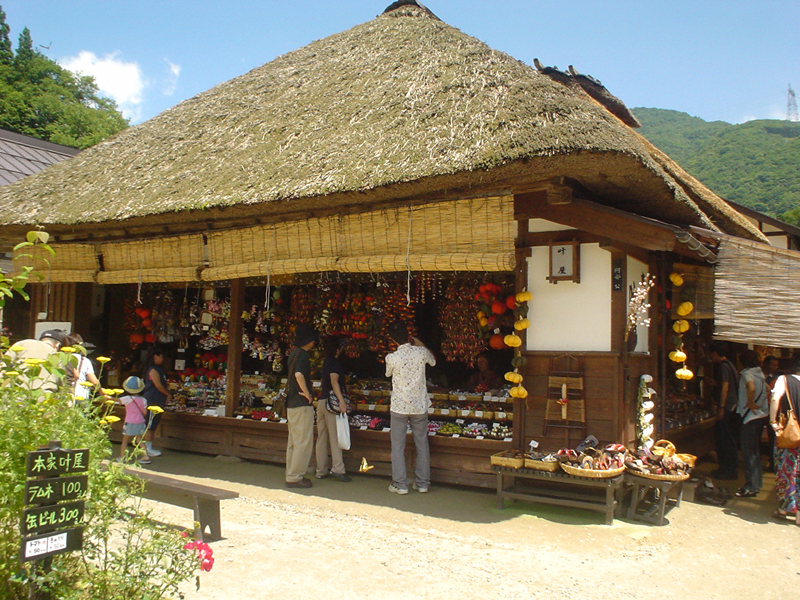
日本語: ja:福島県ja:南会津郡ja:下郷町のja:大内宿の写真。 写真撮影：Fluffy nns
撮影年月日：ja:2006年ja:7月26日
著作権：放棄します